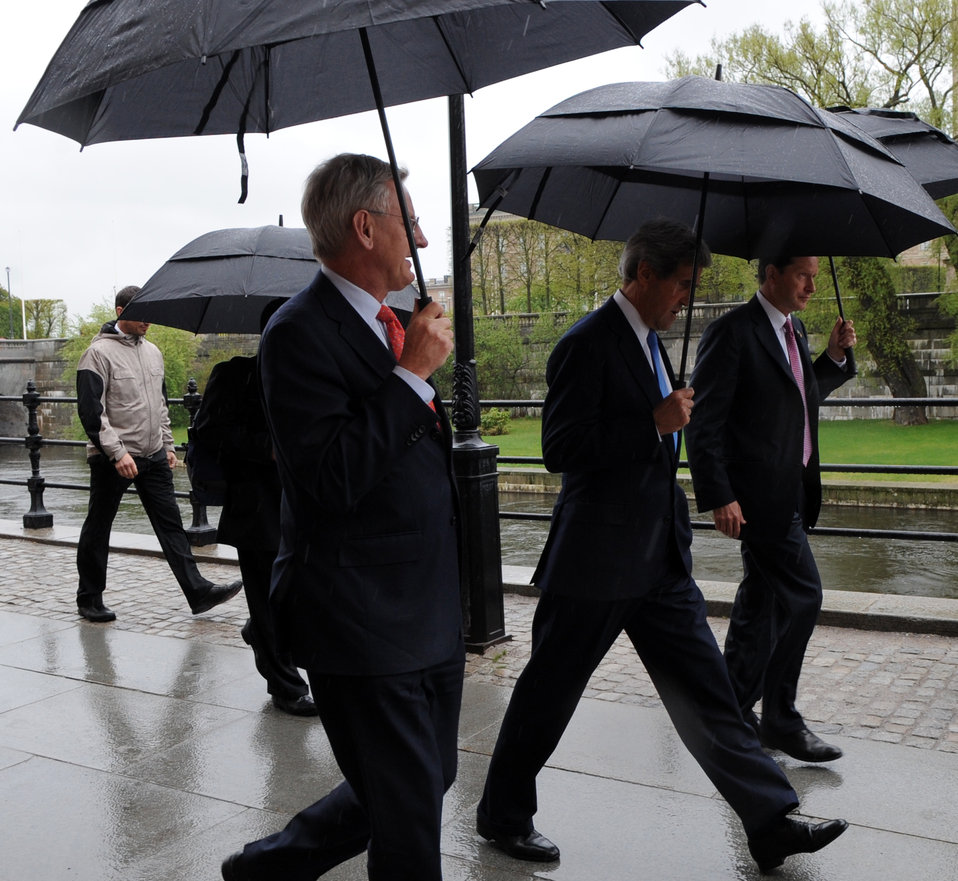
Secretary Kerry Walks to Swedish Prime Minister Reinfeldt's Office

Swedish Foreign Minister Carl Bildt, U.S. Secretary of State John Kerry, and U.S. Ambassador to Sweden Mark Brzezinski walk along the Strommen en route to a meeting with Swedish Prime Minister Fredrik Reinfeldt on May 14, 2013 in Stockholm, Sweden.